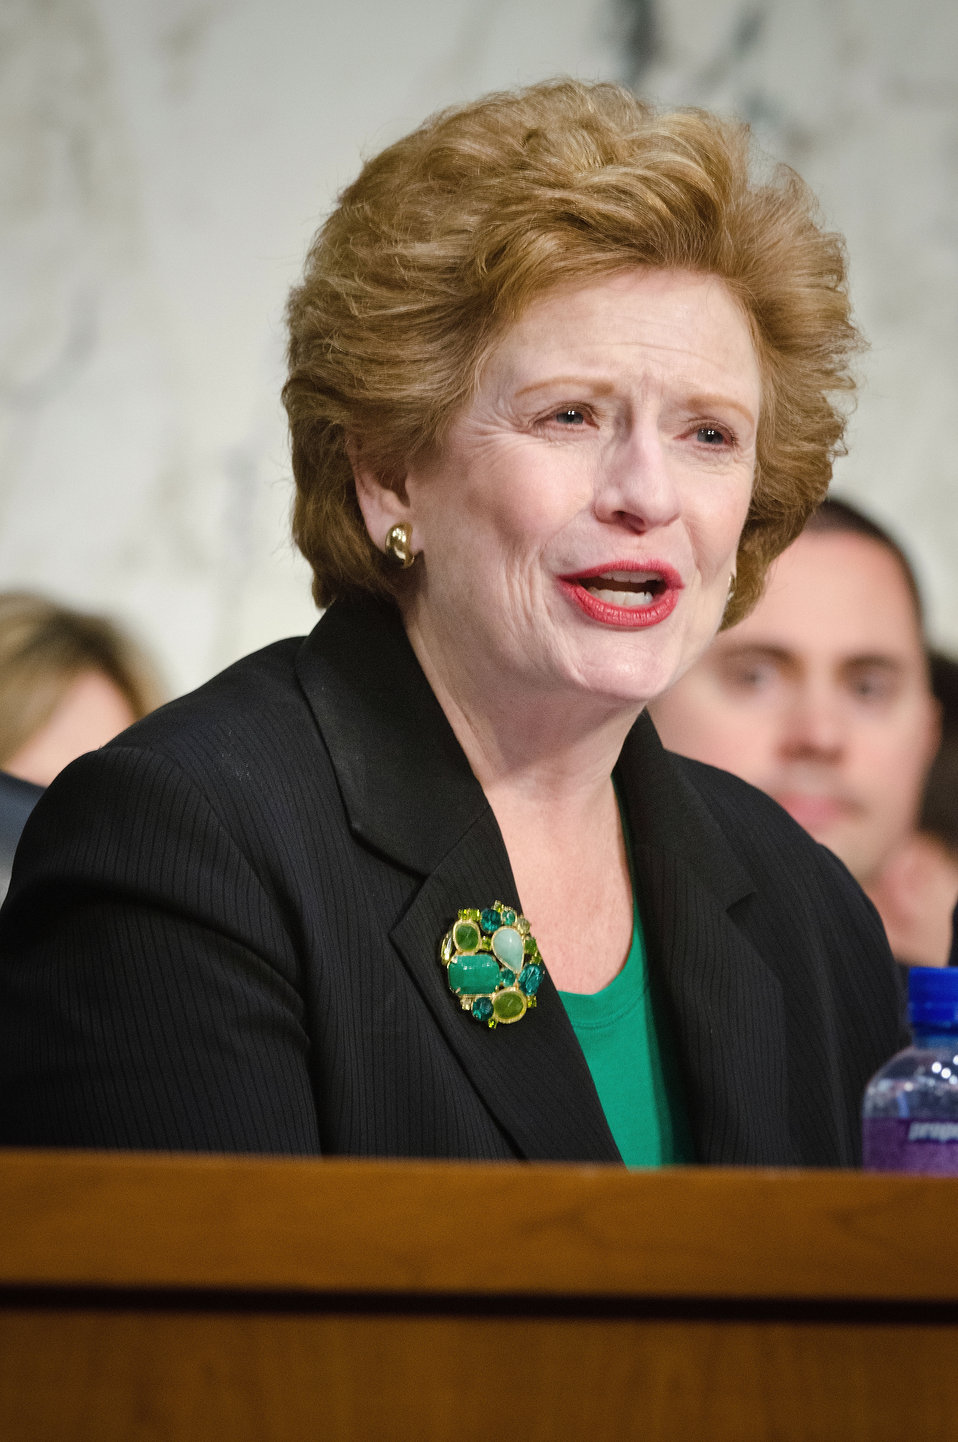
Chairwoman of the Senate Agriculture Committee Senator Debbie Stabenow (MI) poses a question to Agriculture Secretary Tom Vilsack during Secretary Vilsack’s testimony on “Healthy Food Initiatives, Local Production and Nutrition,” on Wednesday, March 7, 2012 in Washington, D.C.